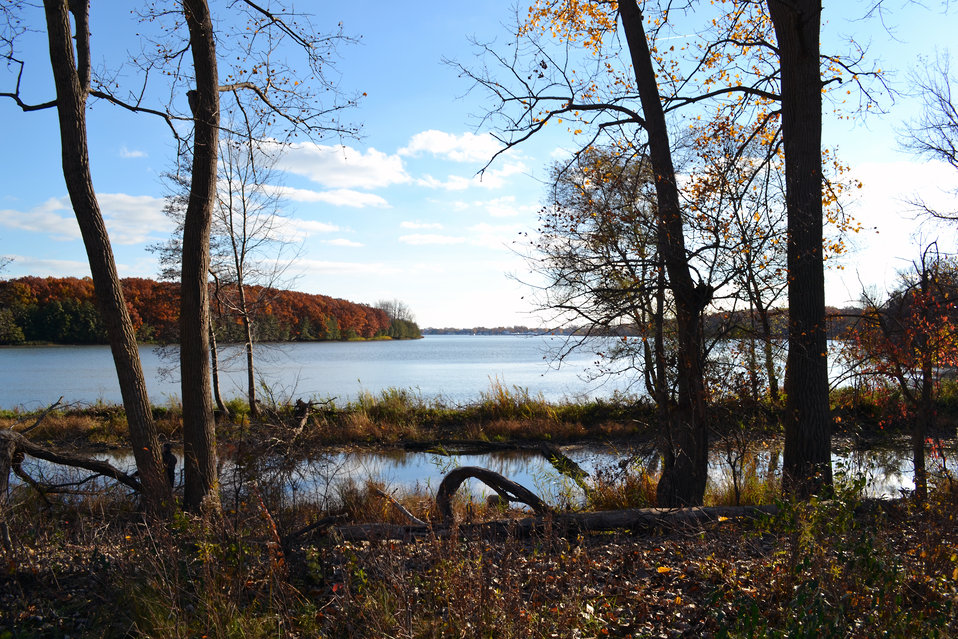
Humbug Marsh

Detroit River International Wildlife Refuge groundbreaking celebration.